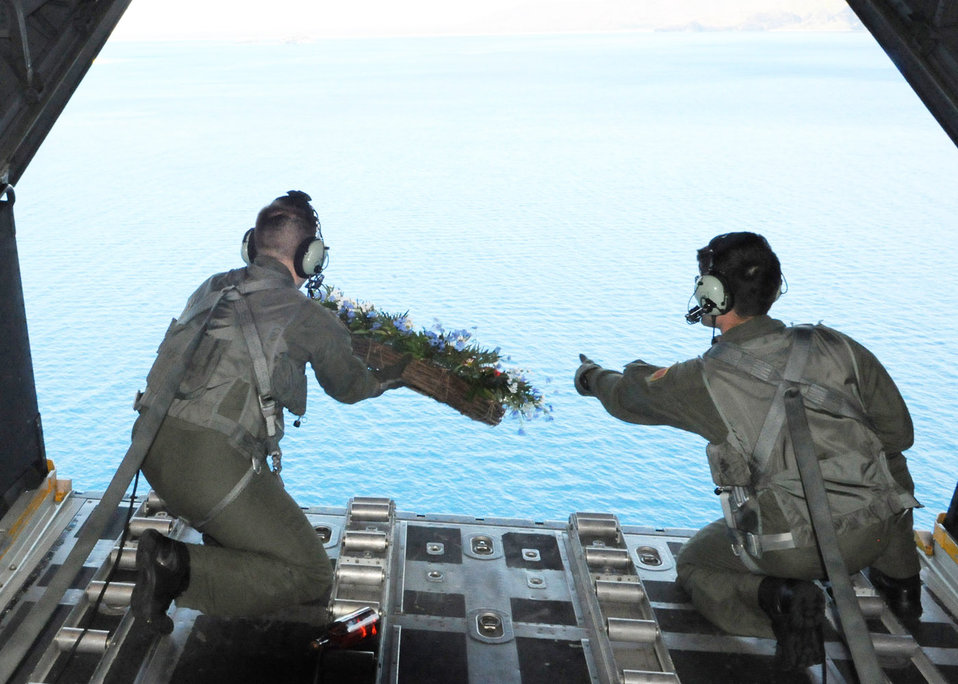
Squadron continues tradition, honors fallen comrades

Staff Sgts. Nicholas Adams (left) and Steve Pressler release a memorial wreath out the back of a MC-130H Combat Talon II Feb. 26 to honor fallen brethren that were lost 28 years ago near Capones Island, Philippines. A 1st Special Operations Squadron MC-130E, call sign Stray 59, crashed during an exercise killing eight crewmembers and 15 passengers and a crew from Kadena Air Base, Japan, flew to reach the exact coordinates of the crash site to release the ceremonial wreath. The memorial flight has been flown every year since the accident in 1981. Sergeants Adams and Pressler are 1st SOS loadmasters.